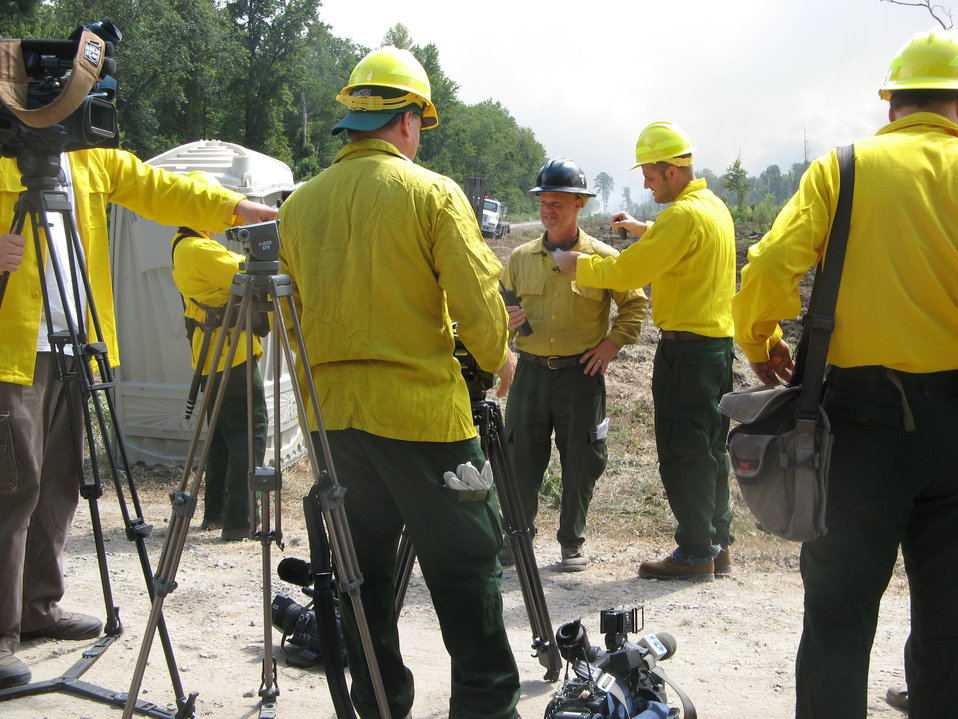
Firefighter gets miked up

Suffolk, VA, Aug. 11, 2011. Televsion reporters put a microphone on Jay Collett, a firefighter on the Lateral West wildfire on Great Dismal Swamp National Wildlife Refuge. The fire, started by lightning, burned over the previous South One Fire of 2008.